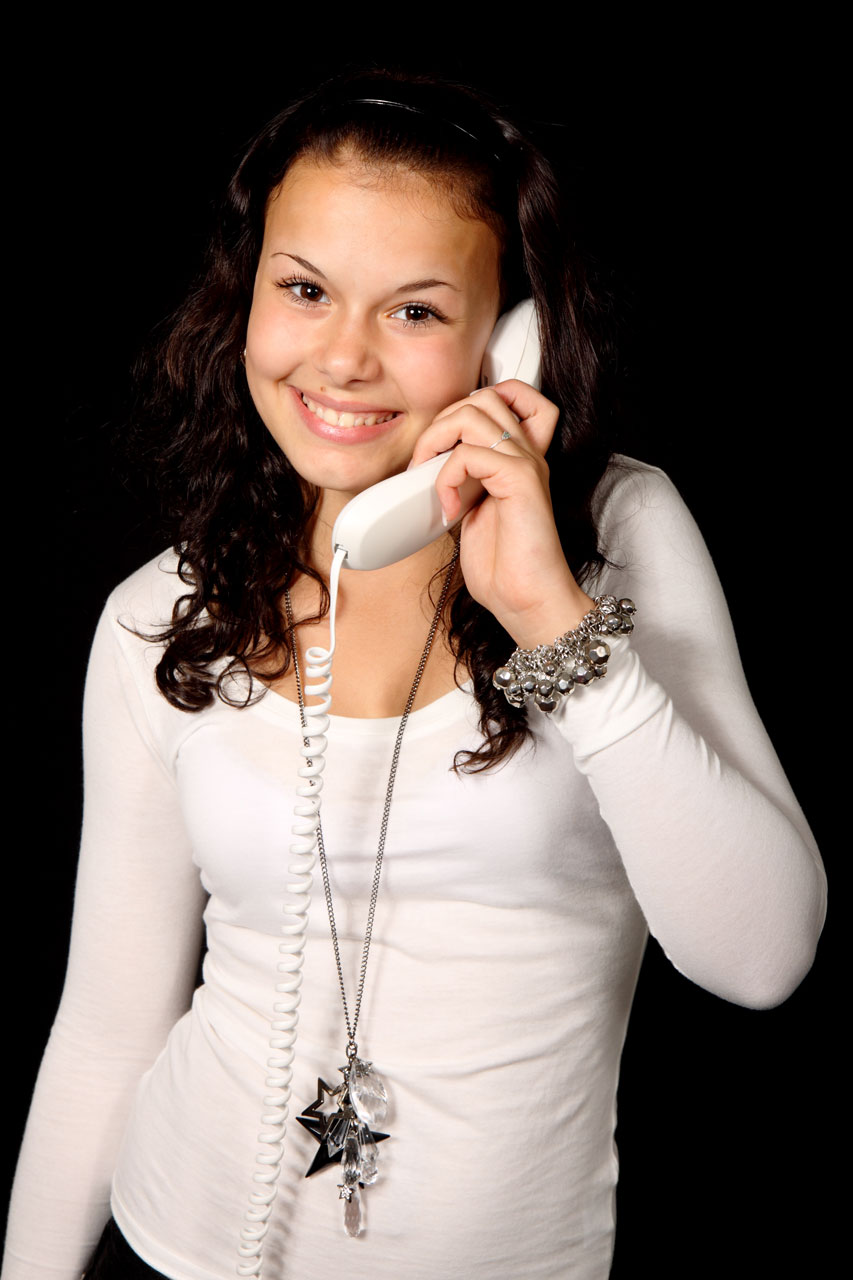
Young woman on the phone.